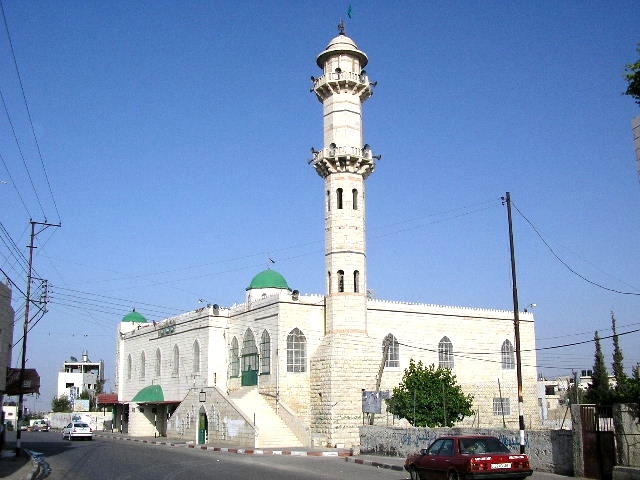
العربية: صورة لمسجد النبي يونس.